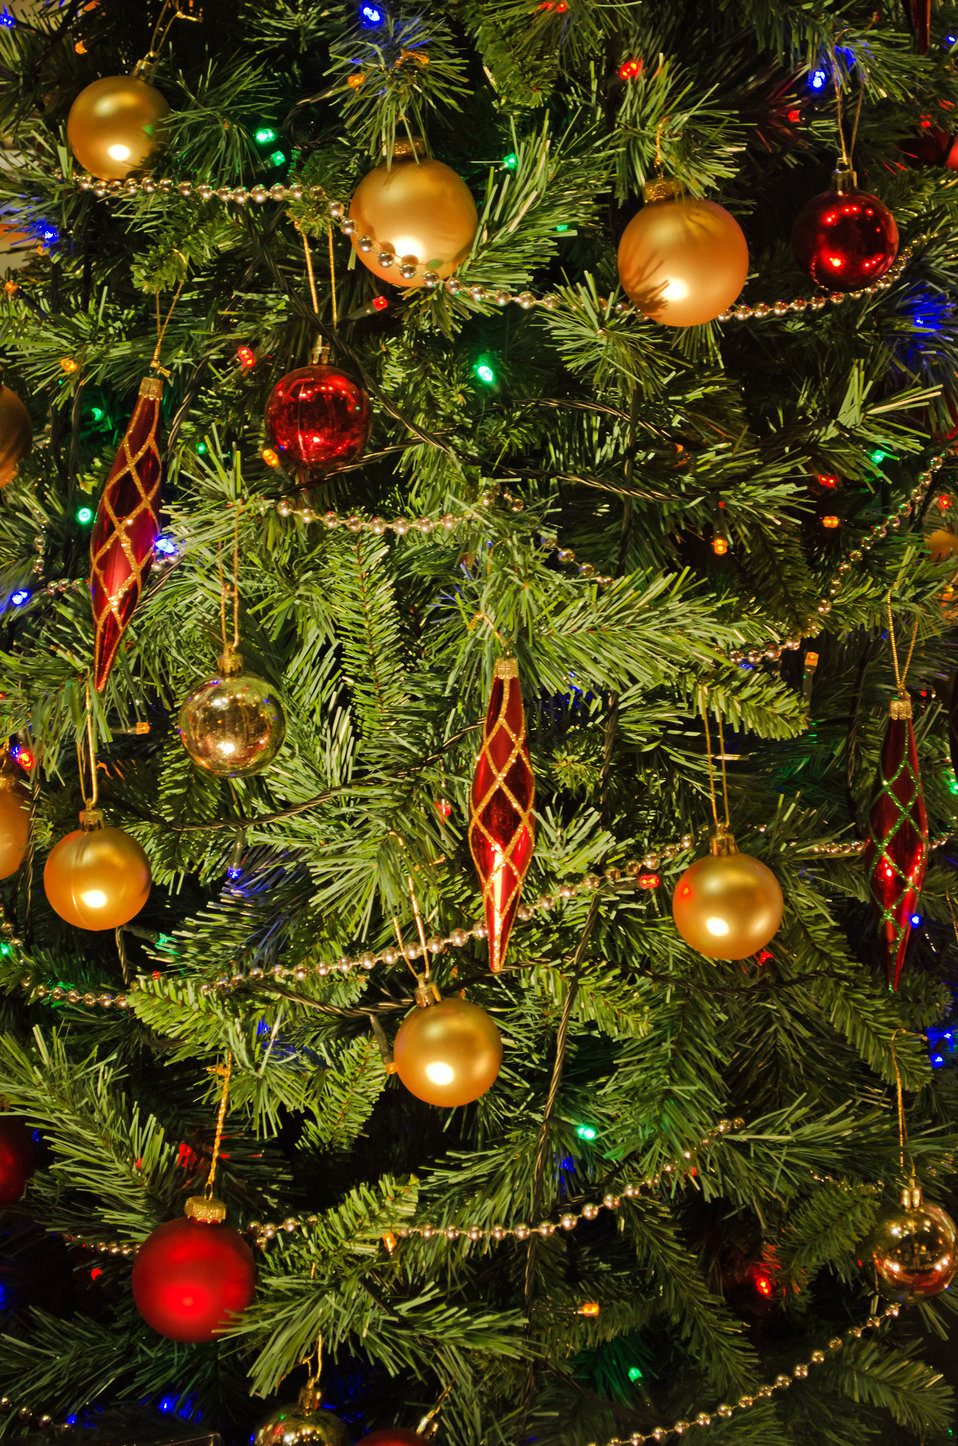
Christmas tree.